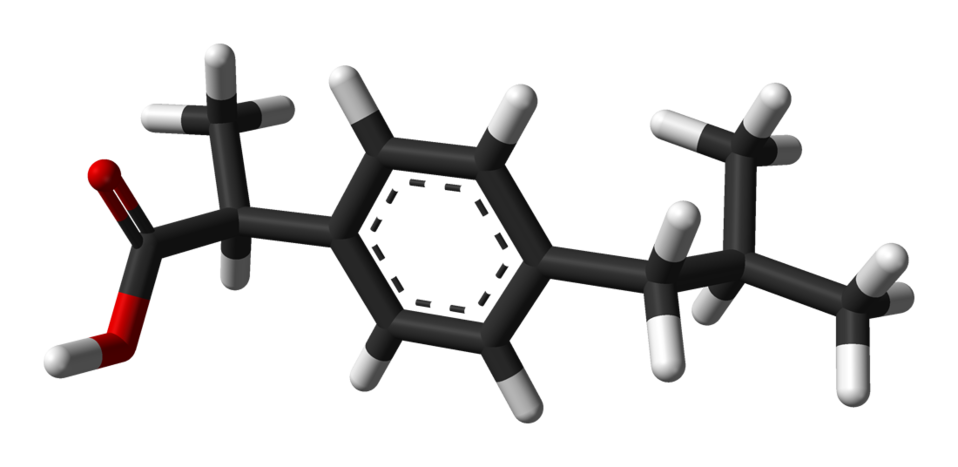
Stick model of the (S)-ibuprofen molecule, based on neutron diffraction data from N. Shankland, C. C. Wilson, A. J. Florence and P. J. Cox (1997). 'Refinement of Ibuprofen at 100K by Single-Crystal Pulsed Neutron Diffraction'. Acta Crystallographica Section C 53: 951-954. DOI:10.1107/S0108270197003193.